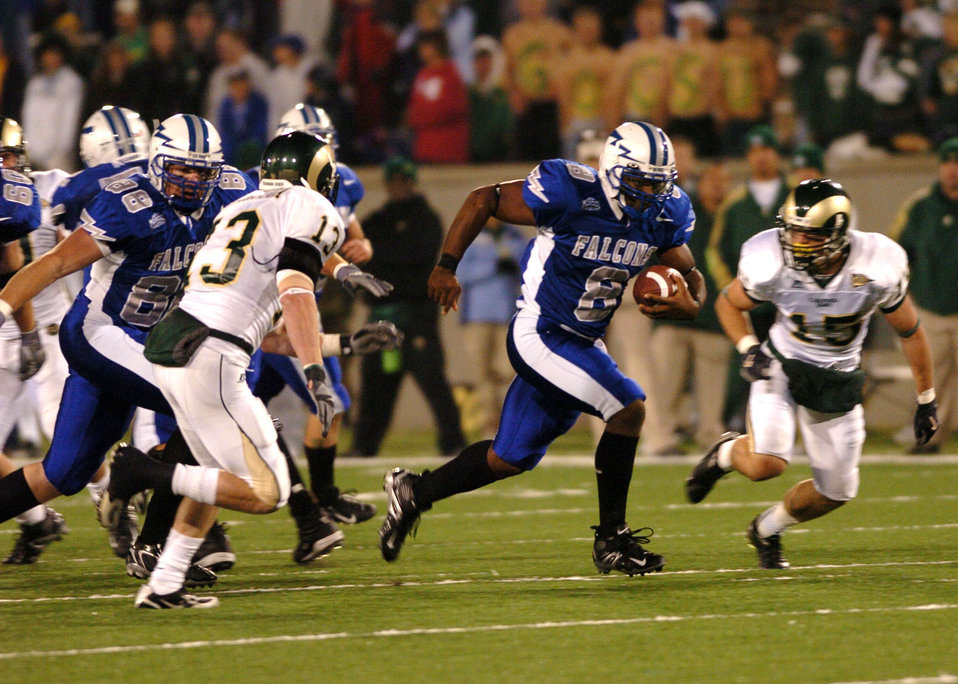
First down pickup

Air Force fullback Jacobe Kendrick meets Colorado State defensive back Mike Pagnotta after a 15 yard pickup and a Falcon first down Thursday night. After trailing at halftime 21-3, Air Force scored 21 unanswered points in the second half to win, 24-21.